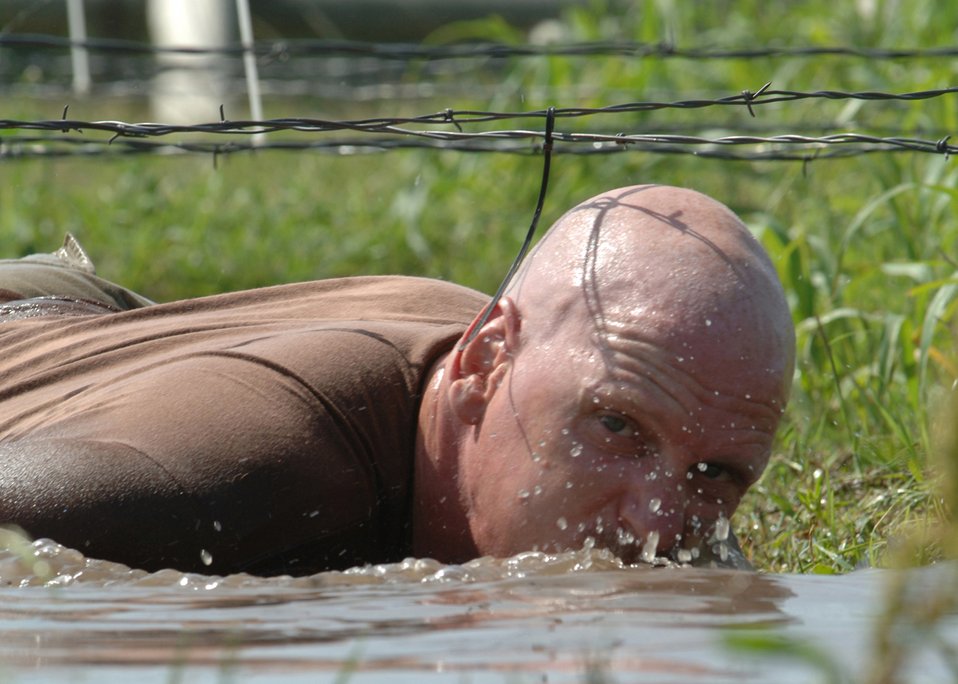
Combat triathlon

Master Sgt. Dan Bryant low-crawls under barbed wire through muddy water at the 3rd Annual Combat Triathlon at McConnell Air Force Base, Kan., on Saturday, June 3, 2006. Sergeant Bryant is the first sergeant for the 22nd Mission Support Squadron.